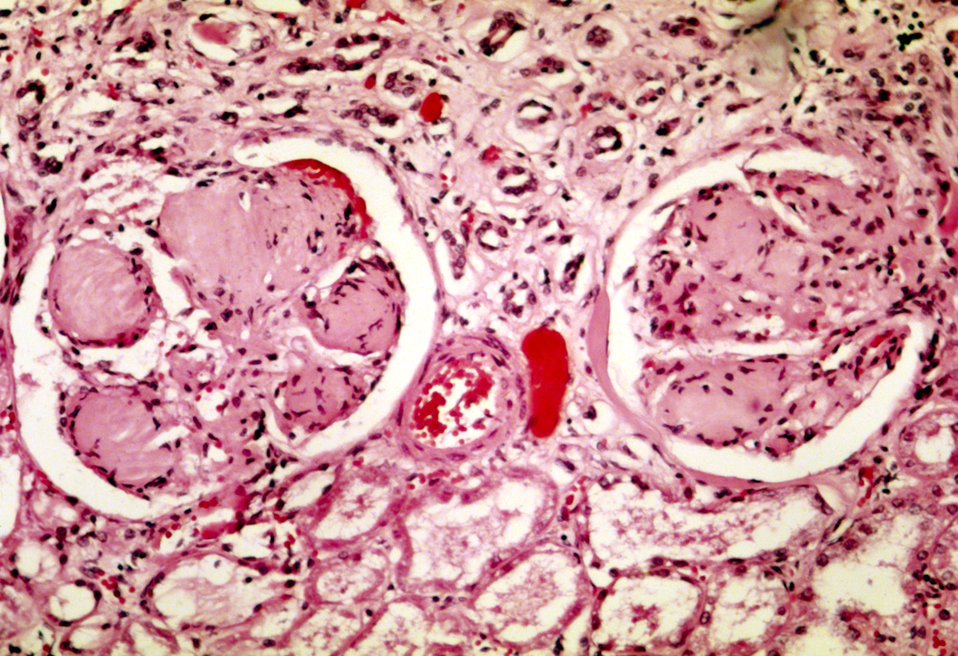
Histopathology of the kidney revealing nodular glomerulosclerosis (Kimmelstiel-Wilson syndrome), characteristic of diabetes mellitus.